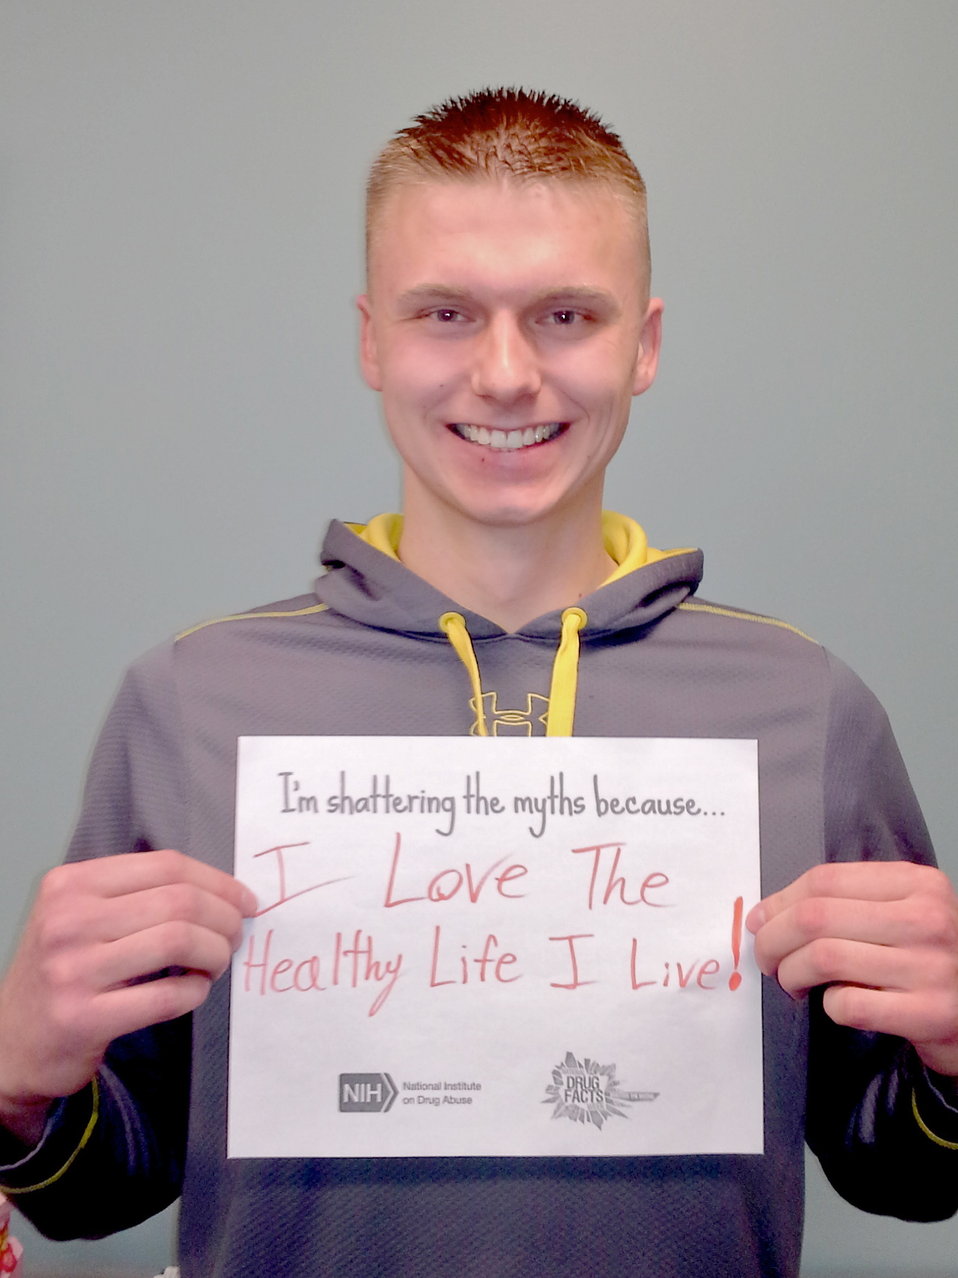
Shattering the Myths campaign in Winona, Minnesota